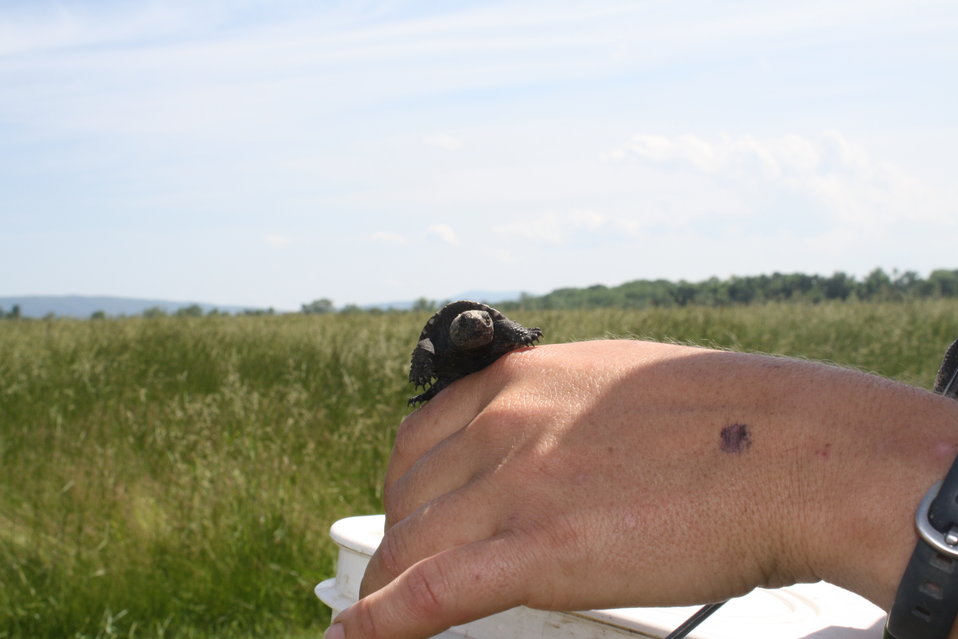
Year of the Turtle

A juvenile snapping turtle from the South River in Virginia.